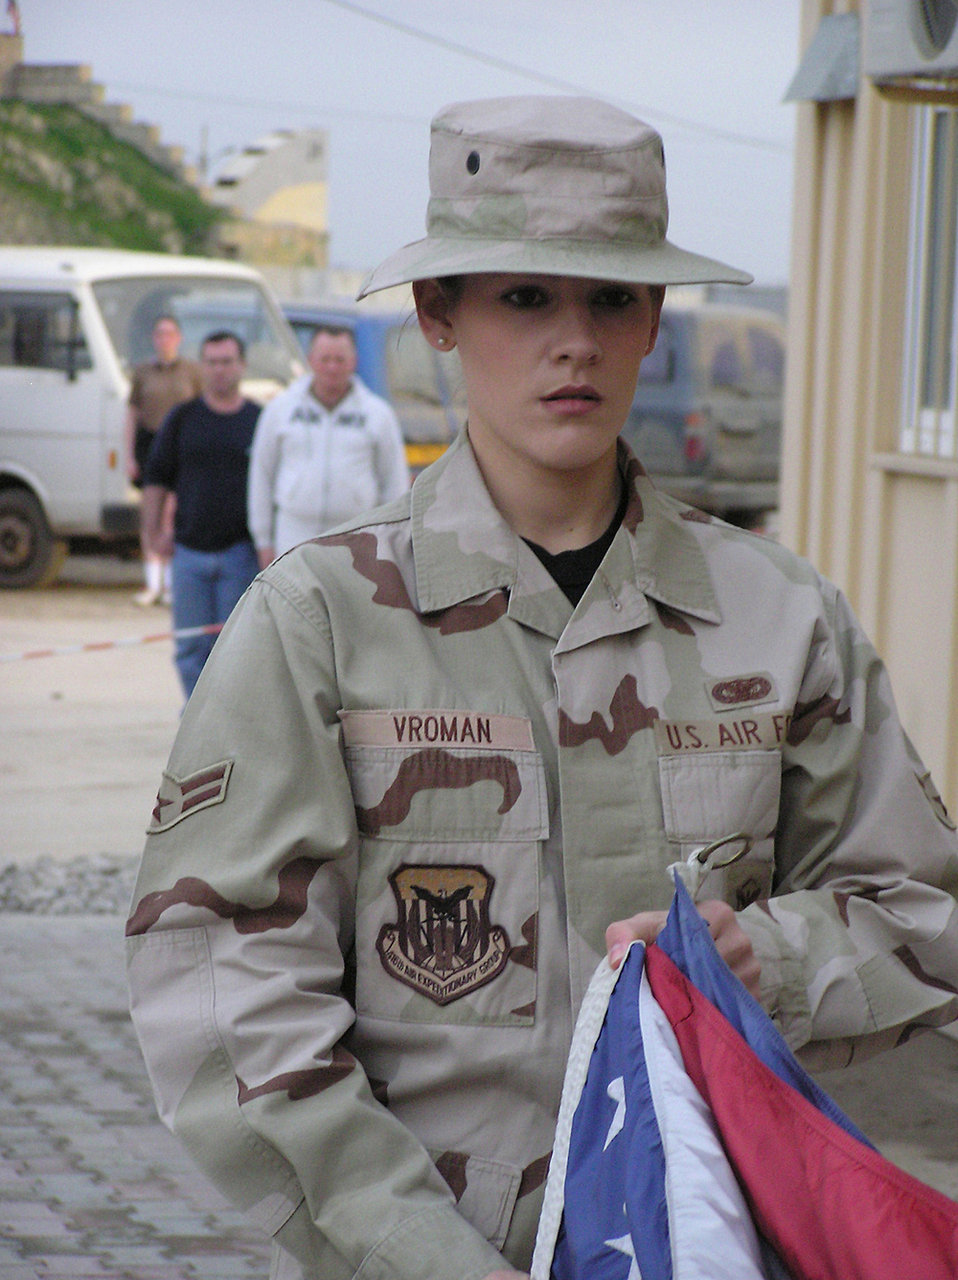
Serving with honor

OPERATION ENDURING FREEDOM -- Shortly before her promotion to senior airman this month, Laurie Vroman leads an honor guard team in a formal retreat ceremony at a forward-deployed location. Airman Vroman is a security forces journeyman with the 455th Air Expeditionary Wing and is deployed from Fairchild Air Force Base, Wash.